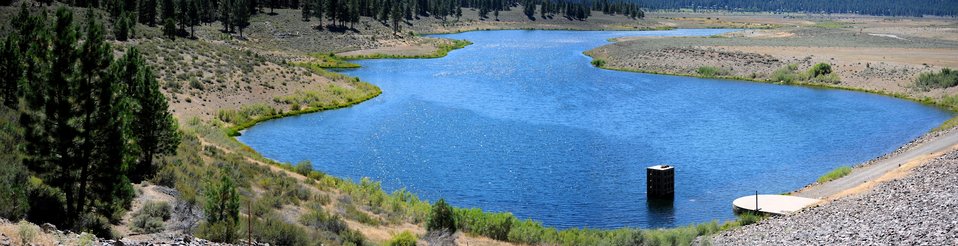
Martis Creek Dam emergency response exercise

A panoramic view of Martis Creek Lake in Truckee, Calif., photographed Aug. 29, 2012. The Martis Creek Lake and Dam are located about 32 miles southwest of Reno, Nev., and provide flood risk management and recreational benefits.